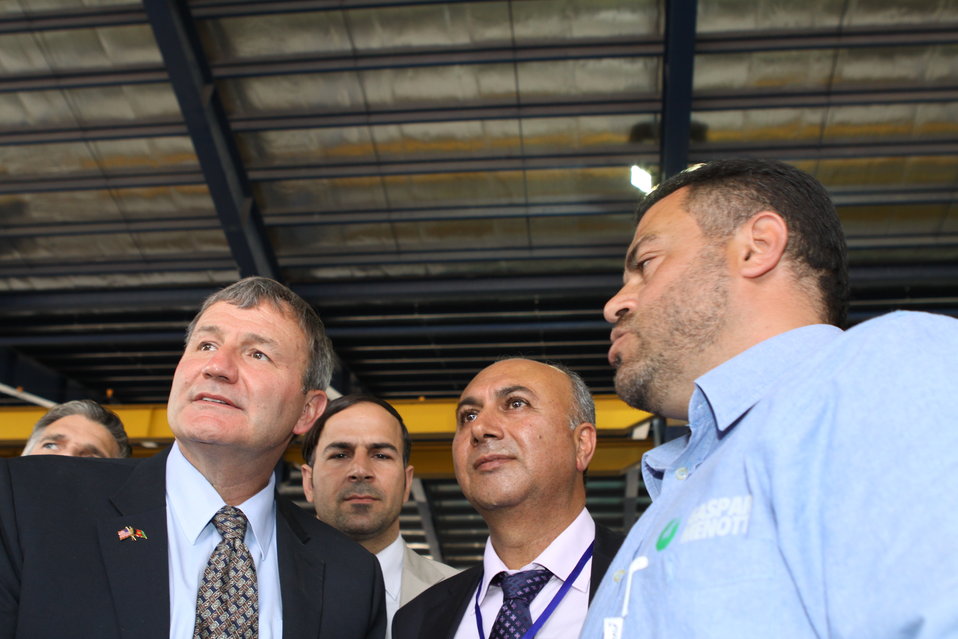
100525 Hirat Marble Conference 384